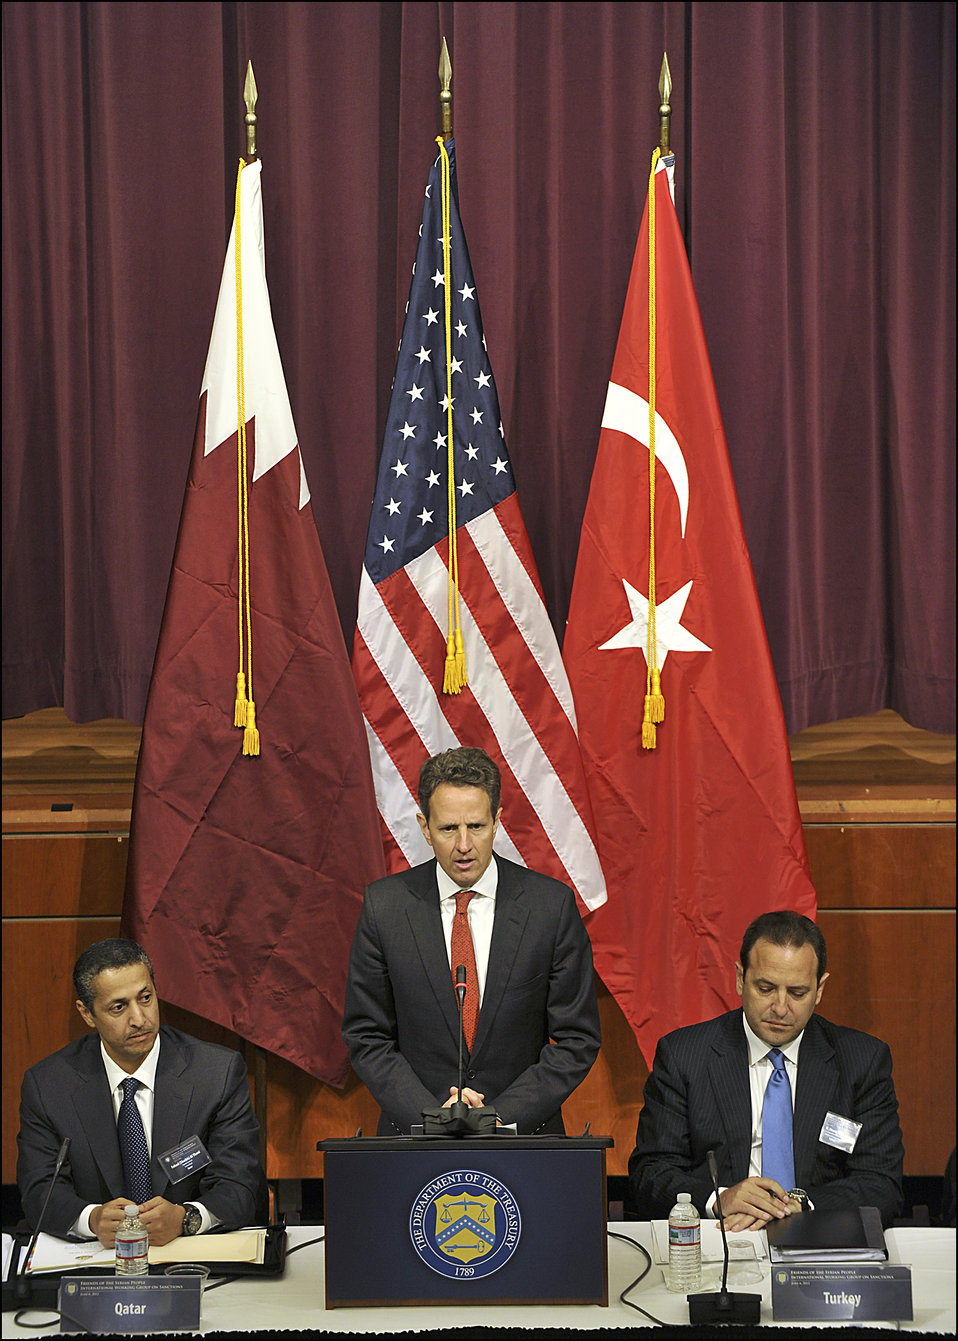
Secretary Geithner speaks before the Friends of Syrian People International Working Group on Sanctions